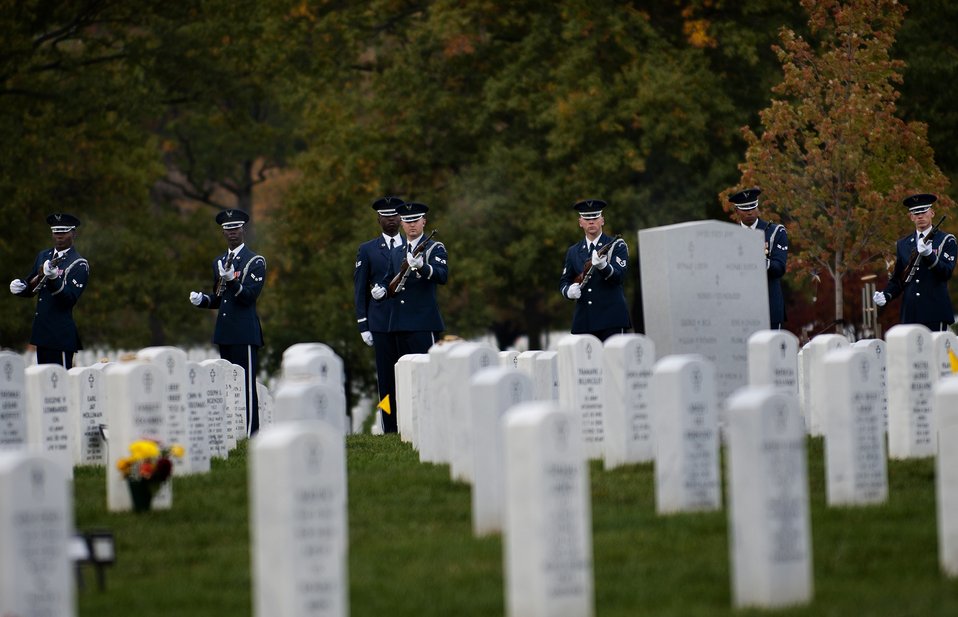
Full military honors

The U.S.Air Force Honor Guard firing team carries out the 21-gun salute to honor Col. Wendell Keller, of Fargo N.D. and Capt.Virgil K. Meroney, of Fayetteville, Ark., during their funeral at the Arlington National Cemetery Oct. 20, 2012. March 1, 1969, Keller and Meroney were the crew of an F-4D Phantom II aircraft that went down while carrying out a night time strike mission in Khammouan Province, Laos. Nearby aircrews reported seeing the aircraft hit by enemy fire. No parachutes were seen after the aircraft was hit. Heavy enemy presence in the area prevented recovery efforts. Between 1994 to 2011, the